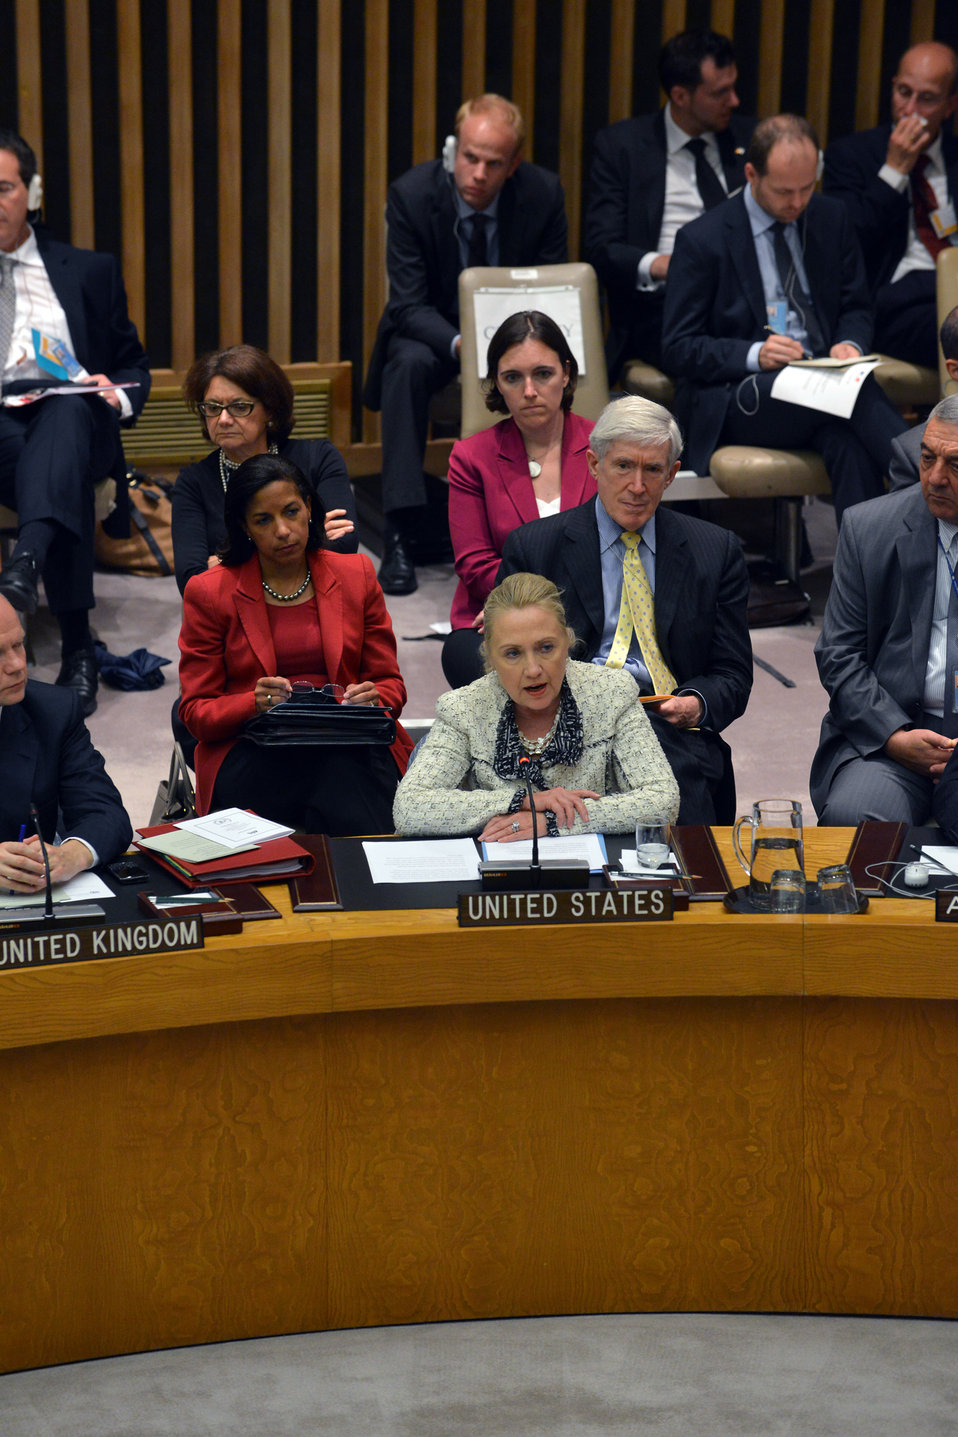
Secretary Clinton Delivers Remarks on Middle East Peace and Security at the United Nations

U.S. Secretary of State Hillary Rodham Clinton delivers remarks on Middle East peace and security at the United Nations in New York, New York on September 26, 2012.